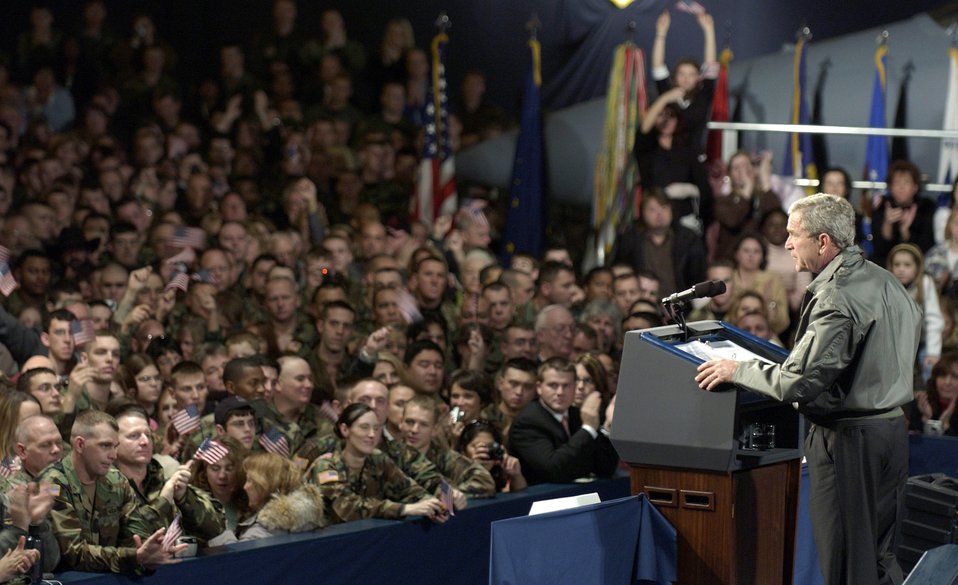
President thanks troops at Elmendorf

ELMENDORF AIR FORCE BASE, Alaska (AFPN) -- President George W. Bush addresses more than 4,500 military and civilian members during a stop here during his trip to China for talks with the regions' economic and strategic leaders. The president spoke for nearly 45 minutes during the Nov. 14 stop.